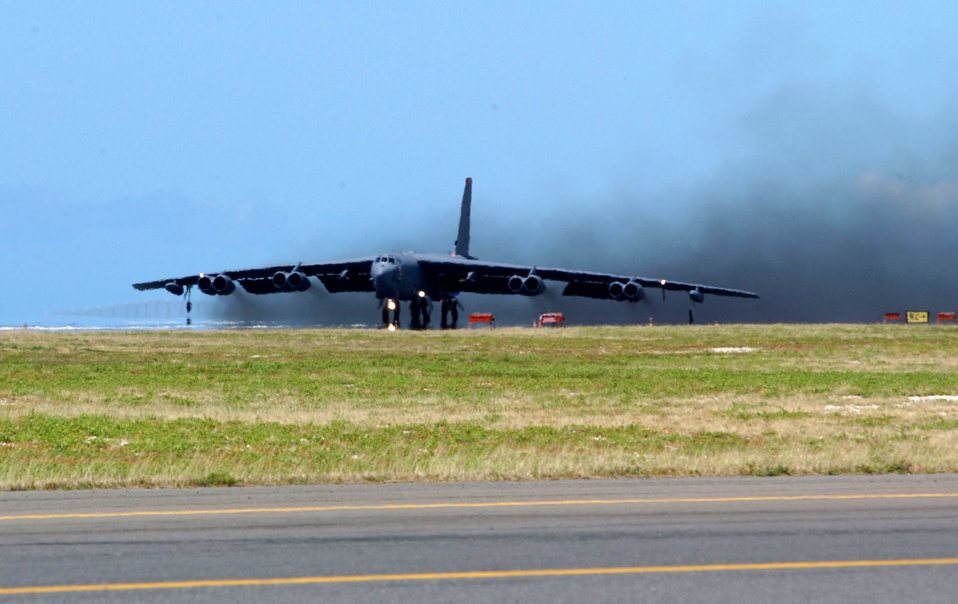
B-52 in the sun

HICKAM AIR FORCE BASE, Hawaii -- A B-52 Stratofortress taxis on the runway April 6. Four B-52s arrived here from Andersen Air Force Base, Guam, to escape Typhoon Sudal which missed the island April 7. The B-52s are deployed to Andersen from Minot AFB, N.D.